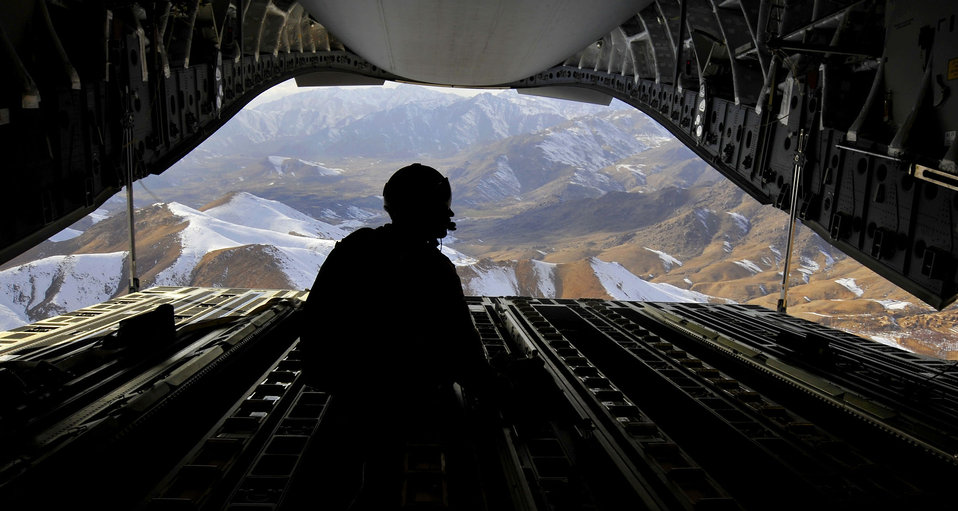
Taking in the view

Tech. Sgt. Kevin Owen sits on the ramp of a C-17 Globemaster III while flying over the mountains of Afghanistan after an air delivery mission, Feb. 2, 2010. Sergeant Owen, a 816th Expeditionary Airlift Squadron loadmaster, and the crew delivered 34 container delivery system bundles to a base in Afghanistan as part of a combat re-supply mission.